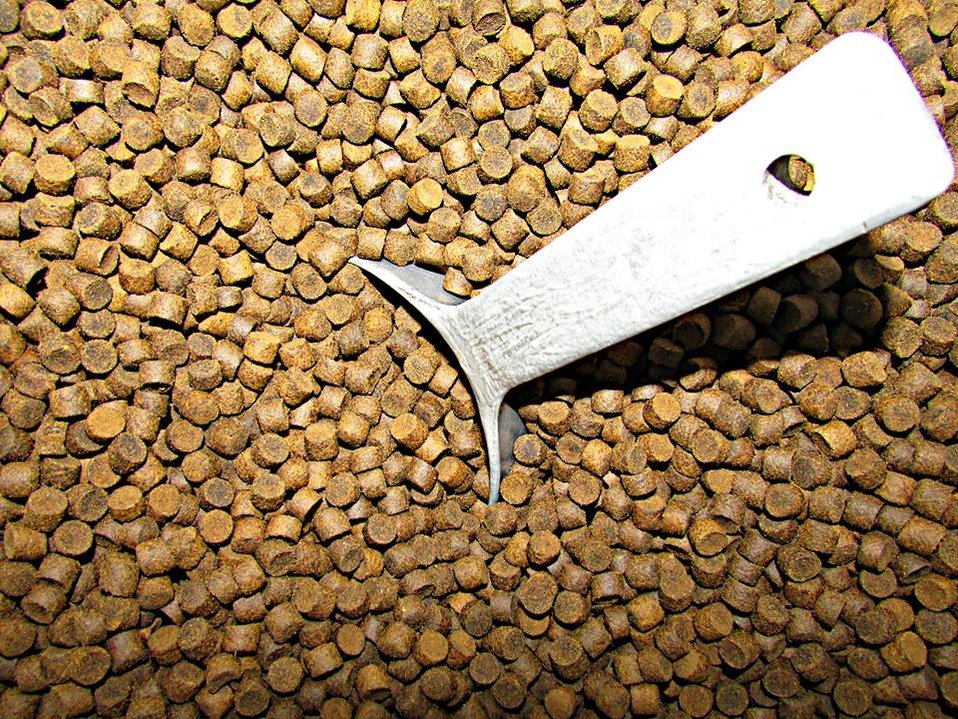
Fish Food

One of the top questions we get on tours is, 'What do you feed the fish?'

Most of our fish are on a pelleted diet. The pellets are made of fishmeal, fish oil and vegetable products. The size and composition of the pellets varies depending on what kind of fish it is, how old the fish is and how much we want the fish to grow.